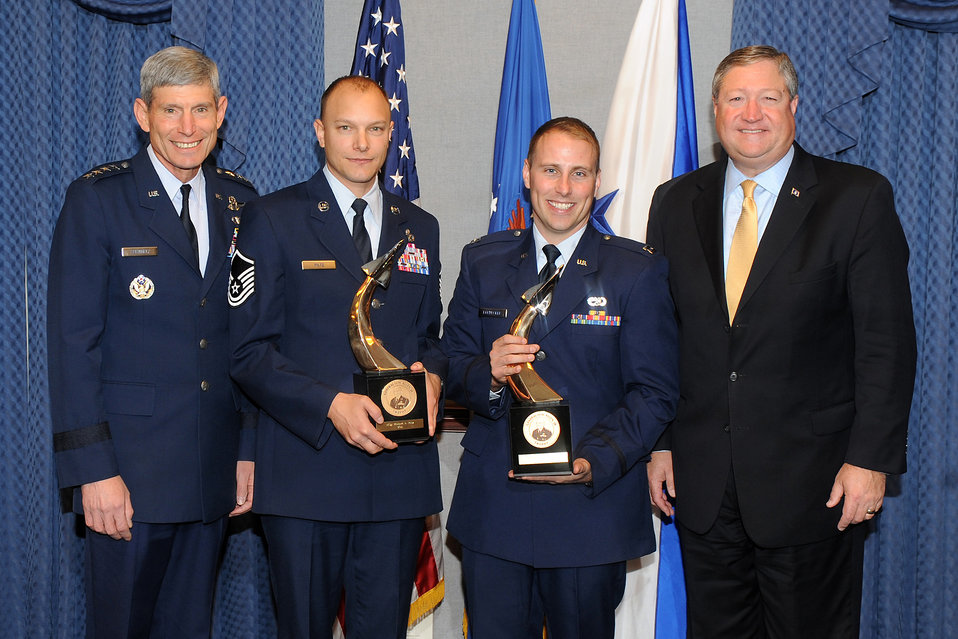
2011 Lew Allen Trophy

Air Force Chief of Staff Gen. Norton Schwartz and Secretary of the Air Force Michael Donley stand with Capt. William Bernecker and Master Sgt. Richard Piltz, the 2011Gen. Lew Allen Jr. Trophy recipients, during a ceremony Oct. 28, 2011, in the Pentagon.